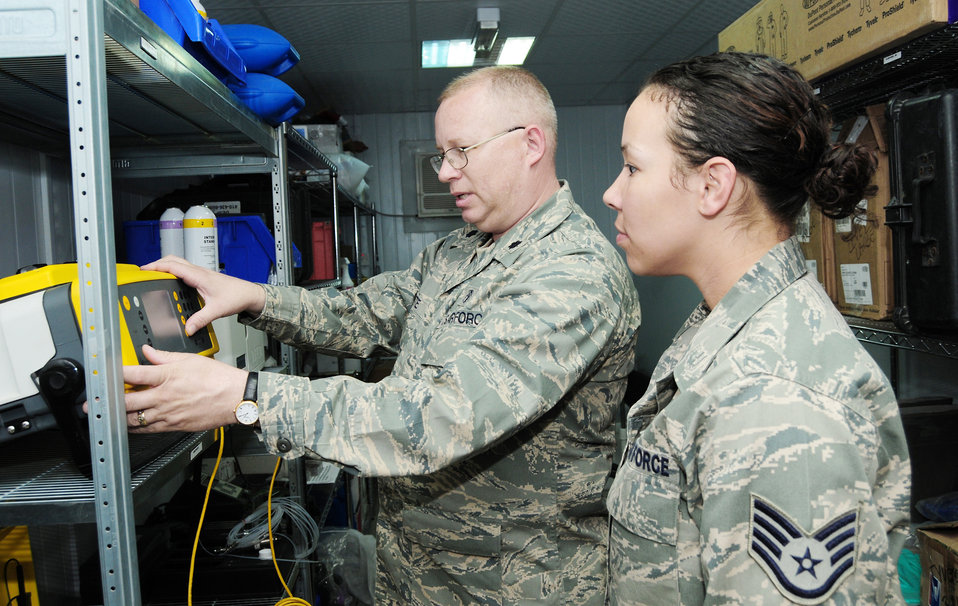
Medics earn Air Force-level recognition

Lt. Col. Ronald Porte (left) and Staff Sgt. Nicole Logan review data on a gas chromatograph used to measure the concentration of volatile organic compounds in the enviornment Feb. 15, 2010, at an air base in Southwest Asia. Colonel Porte, deployed from Eglin Air Force Base, Fla., is part of the Air Force Medical Service Outstanding Bioenvironmental Engineering Team of the Year. Both Airmen are with the 386th Expeditionary Medical Group.